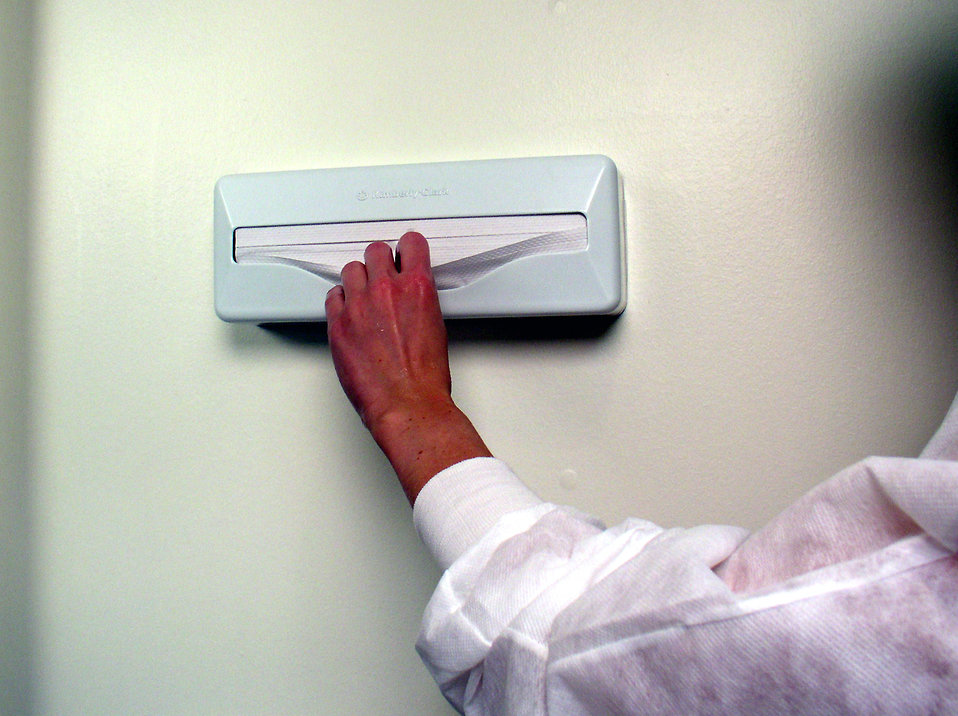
(Image 8 - Hand Washing Procedure) This laboratorian is grabbing a disposable hand towel to dry her wet hands.